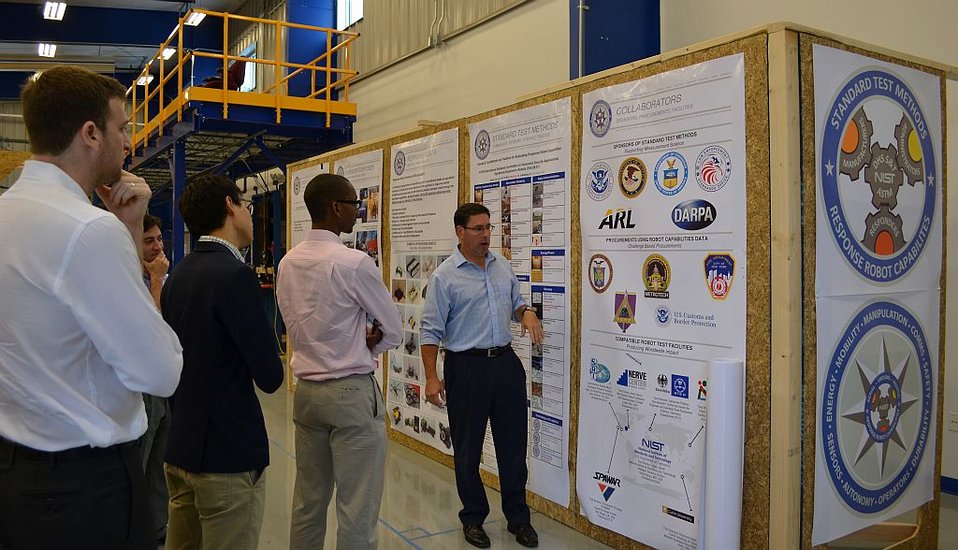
Committee on Commerce, Science, and Transportation Tour

Adam Jacoff (Center) of the NIST Engineering Lab Intelligent Systems Division briefs staffers from the Senate Committee on Commerce, Science, and Transportation in the new NIST Robotic Test Facility.